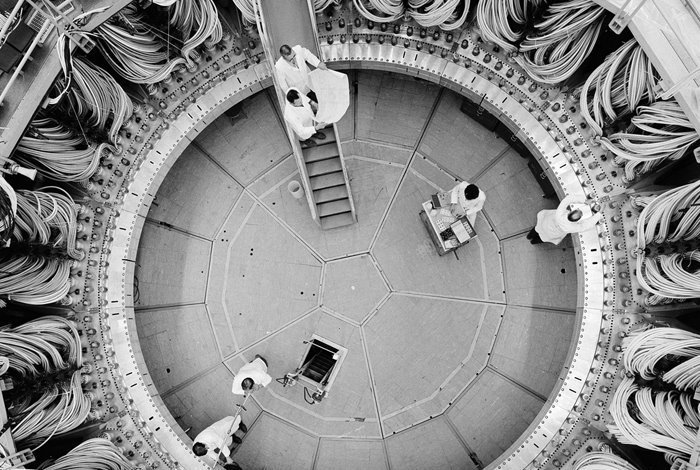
Photo of the Week: What You Needed to Contain 100 Million Degree Plasma for 100 Millionths of a Second… in 1974

In the early years of magnetic fusion, there was talk among scientists of controlling nuclear energy to create useful power.

To do this, scientists heated plasma to temperatures as high as 100 million degrees Celsius -- ten times hotter than the center of the sun. Controlling such high levels of energy required the construction of large machines that could withstand these extremely high energy levels.

In this 1974 photo, laboratory scientists are shown working on Scyllac, one of the largest machines used for magnetic fusion experiments, located at Los Alamos National Laboratory. Scyllac filled a 100-by-100-foot building from wall to wall, and used 12 miles of one-inch cables and 3,000 capacitors to contain hot plasma the size of a small garden hose for just 100 millionths of a second.